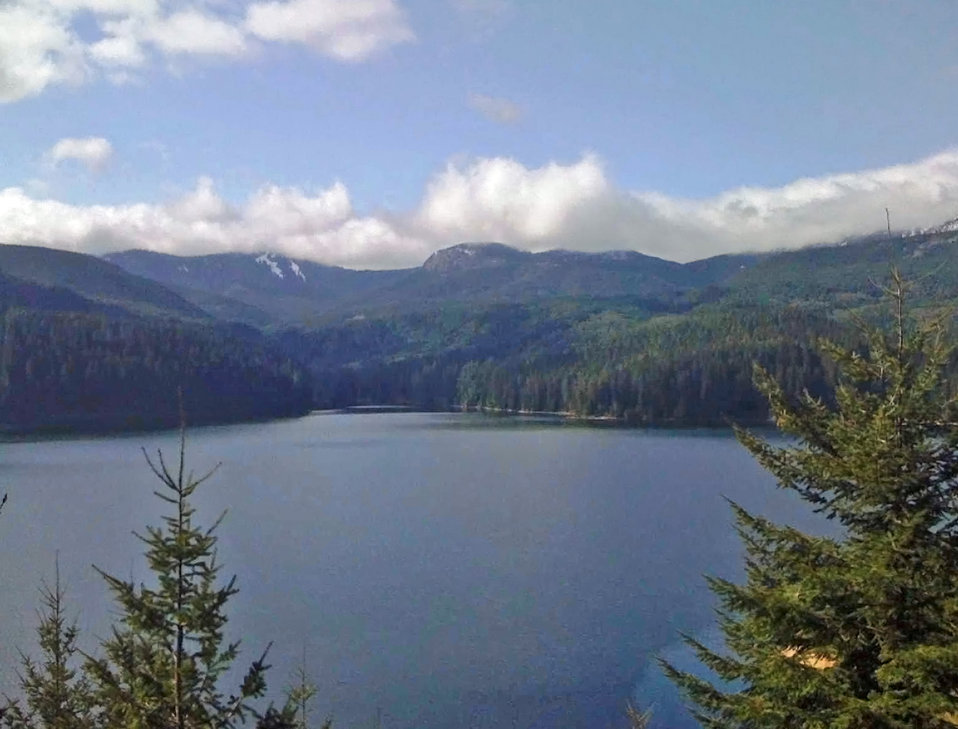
Day of Forests a

The sun shines on a lake at Gifford Pinchot National Forest in WA.